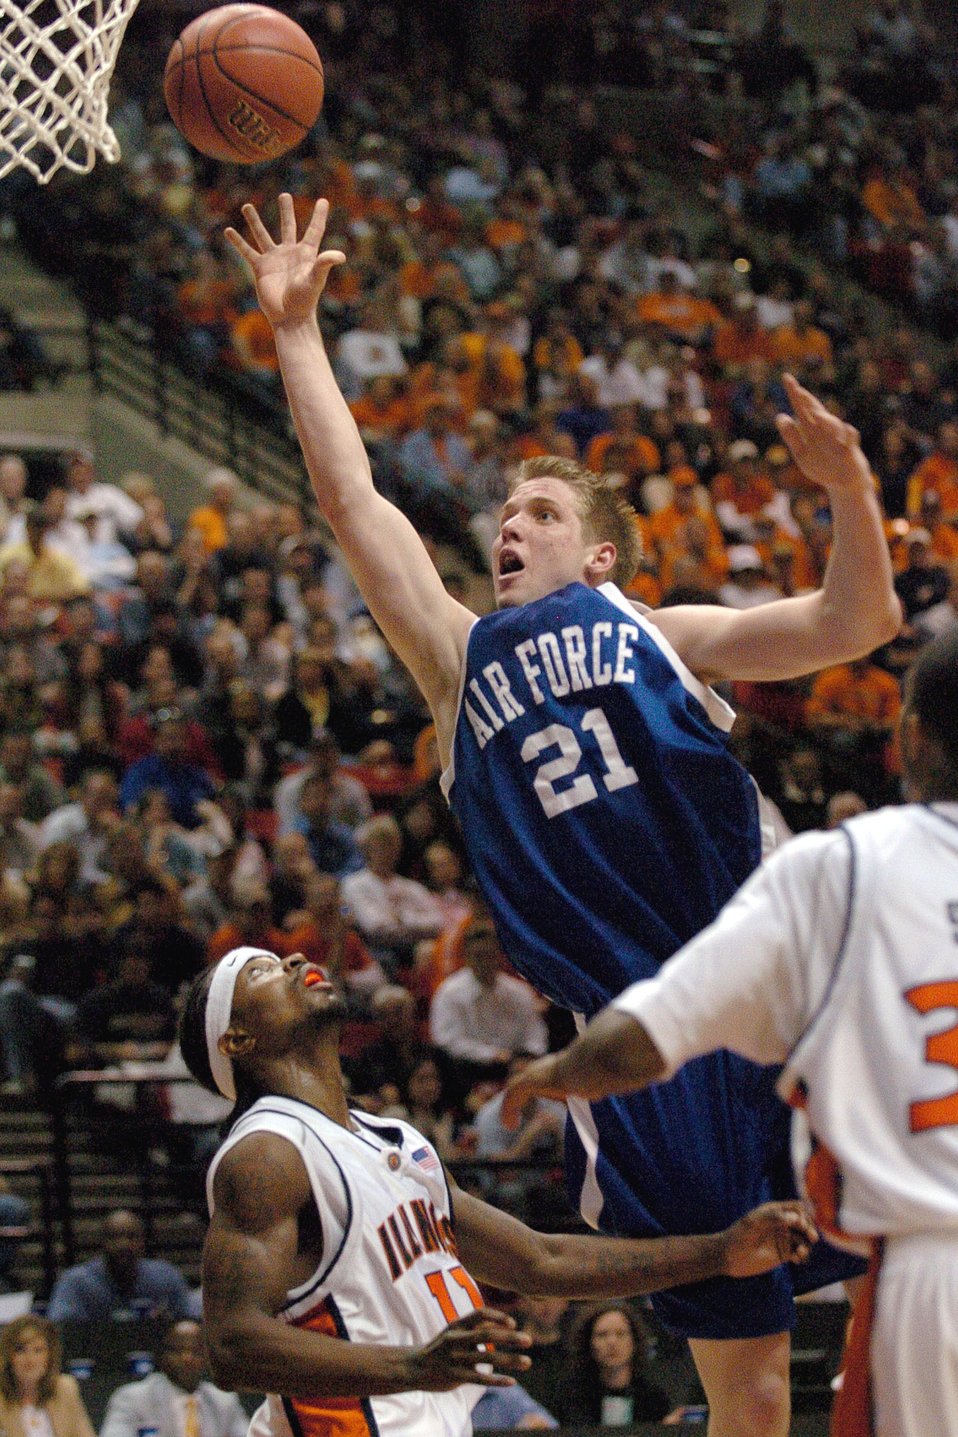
Illinois grounds Air Force

Falcon forward Jacob Burtschi flies to the basket above Illinois guard Dee Brown during a NCAA Tournament game Thursday, March 16, 2006, at Cox Arena in San Diego.